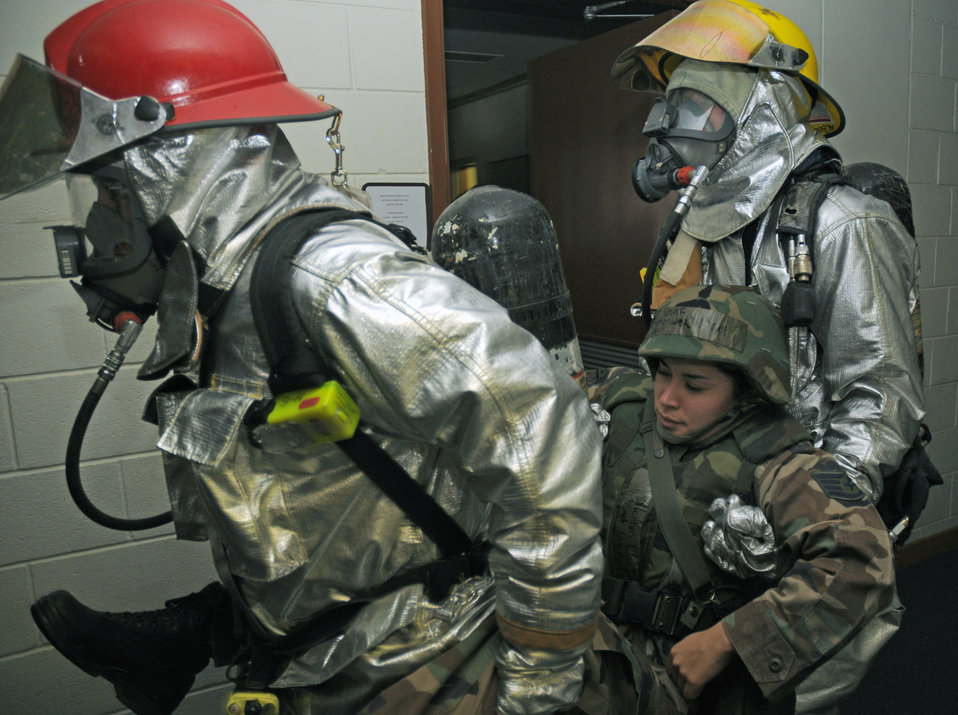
Airmen, Marines join forces during exercise at Kadena

Firefighters from the 18th Civil Engineer Squadron remove an injured person from a building following a simulated missile strike Dec. 3 at Kadena Air Base, Japan. The simulation is part of Exercise Beverly High 09-01, a joint Air Force-Marine Corps exercise designed to test the ability of both services to execute their critical missions under simulated combat conditions.